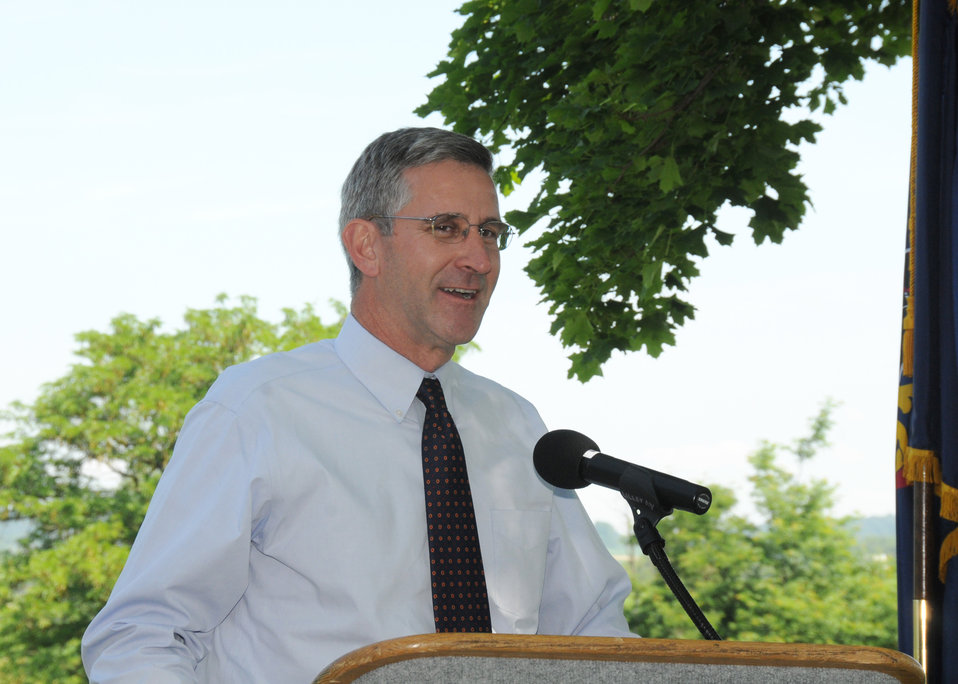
Pennsylvania Secretary of Agriculture Russell Redding speaks about the cooperative efforts between Federal and State agencies in the Chesapeake Watershed Project held at the Eby-Patterson farm in Hershey, PA, on Friday, June 18, 2010. USDA photo 10di1409-116.